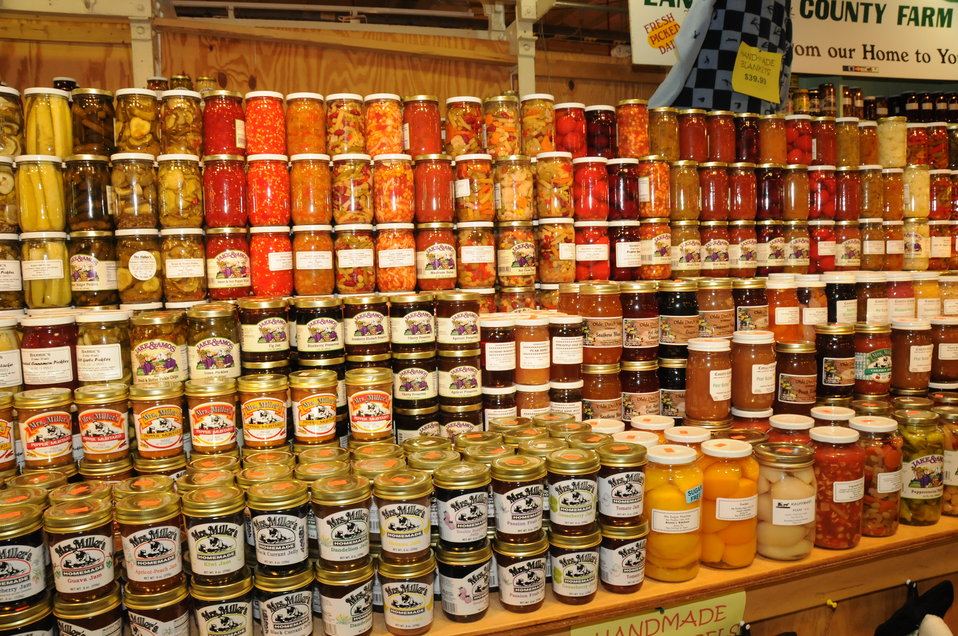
The Reading Terminal Market offers produce fresh from the field to the people of Philadelphia, PA on April 3, 2009. There are Amish specialties, fruits, vegetables, meats, seafood, and poultry. Reading Terminal Market opened for business in 1892 with approximately 78,000 square feet and almost 800 spaces for vendors. The Market was revitalized in the 1990’s and today is still the gastronomic bazaar that its original planners had envisioned. Many of the historic Market stands survived the reconstruction and are once again filled with local produce, fresh eggs, milk, meats, poultry, seafood, handmade crafts, jewelry, and clothing. The Market is home to more than 80 merchants, two of whom are descendants of the original stand holders from a century before.